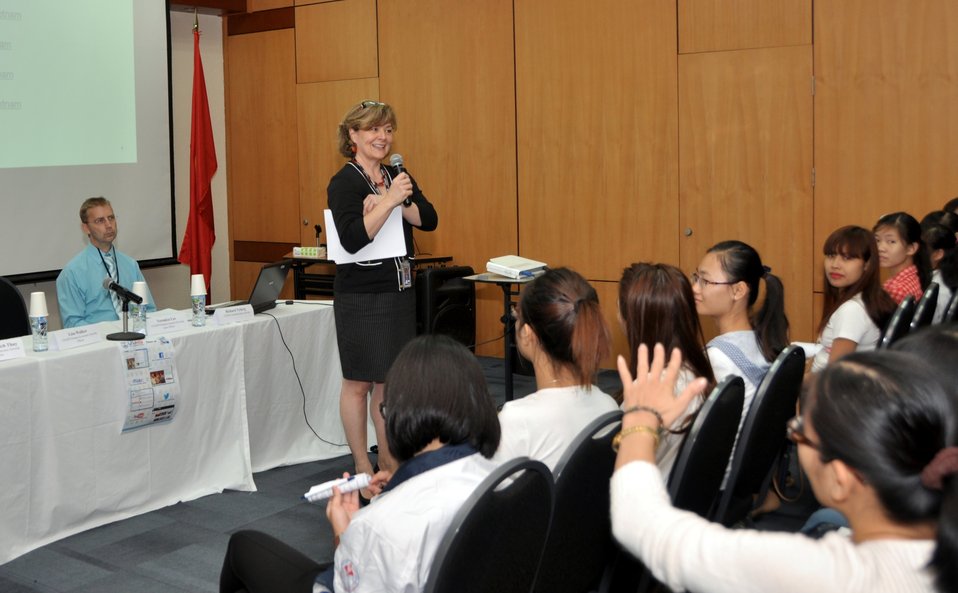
Students join the ‘USAID and Higher Education in Vietnam’ talk

Photo: @USAIDVietnam, November 19, 2012